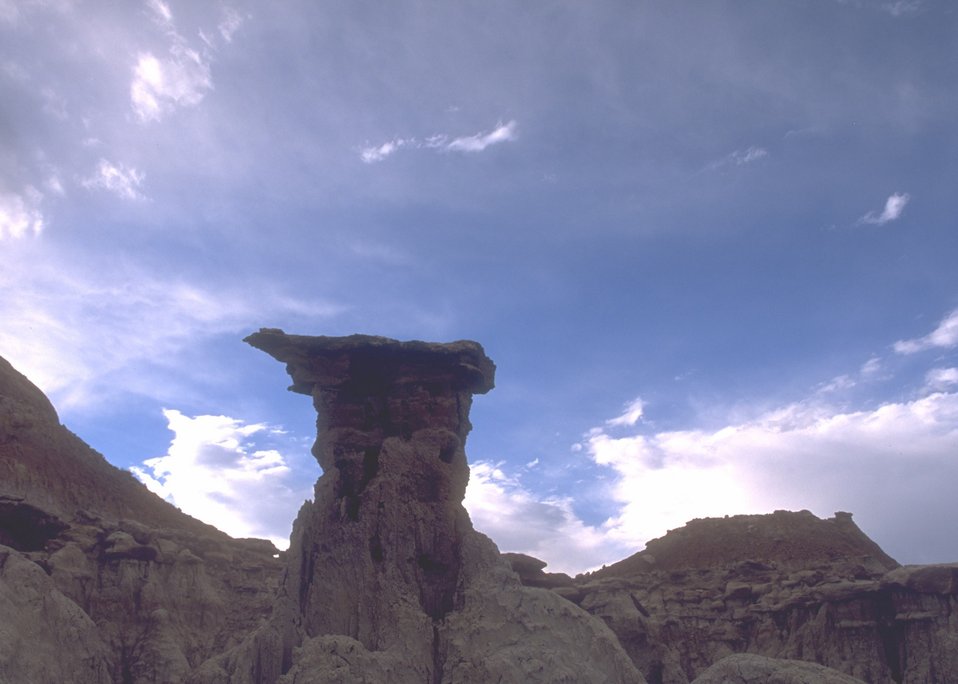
Gooseberry Interpretive Area, Worland Field Office.